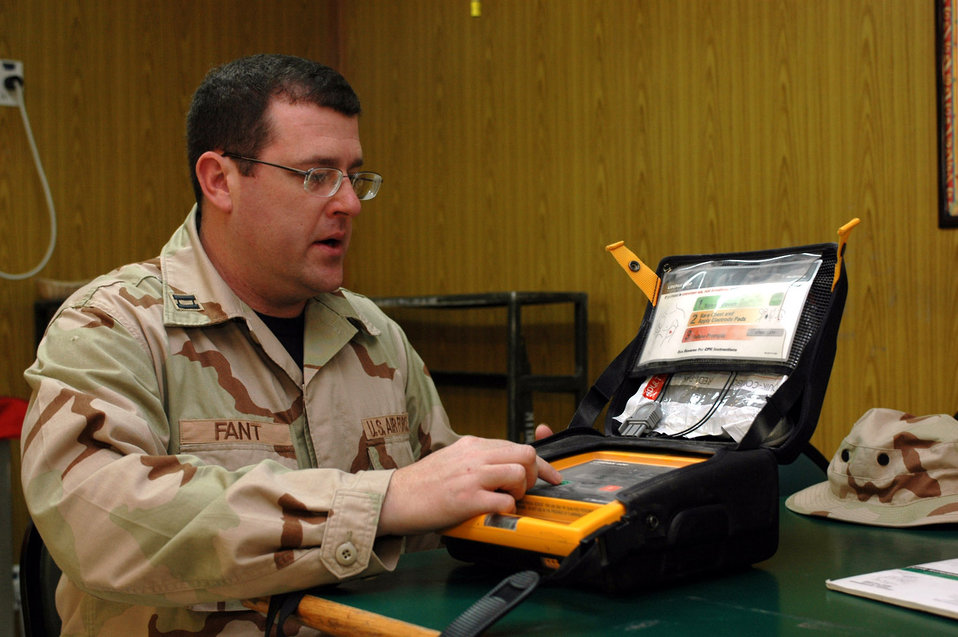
Medics treat servicemembers throughout Soutwest Asia

Capt. James Fant performs a weekly inspection of the automated external defibrillator at the Independence Dining Facility April 11 in Southwest Asia. The shock delivered by an AED helped save an Airman's life recently. Captain Fant is a 379th Expeditionary Medical Group clinical nurse.